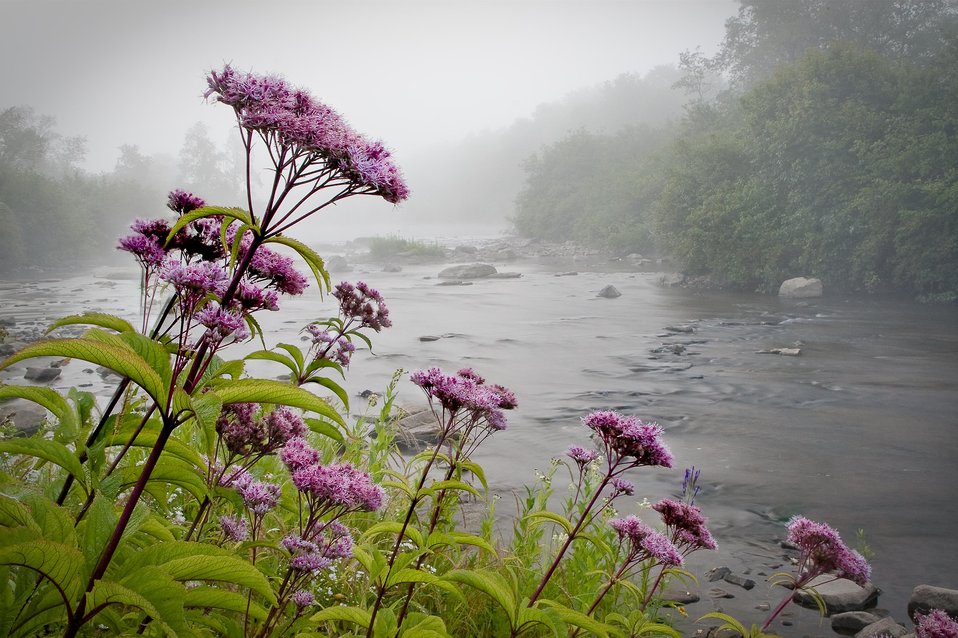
The Winner - Joe-pye Weed

Joe-pye weed beside the Blackwater River at Canaan Valley National Wildlife Refuge